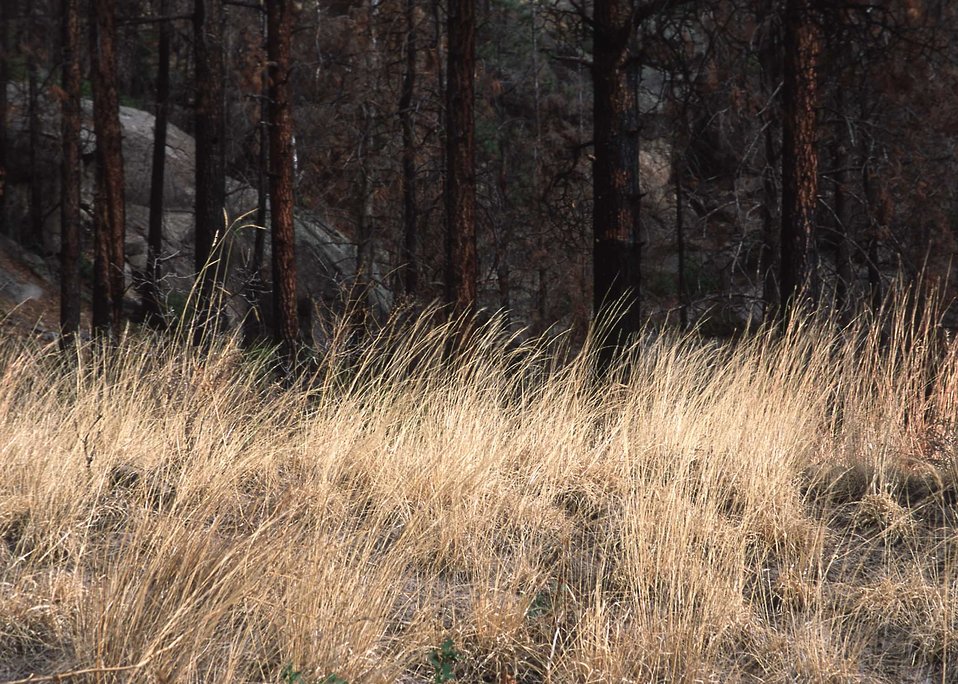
First years growth of emergency reseeding after the Los Alamos fires. Some of the species planted for erosion control and habitat improvement were prairie junegrass, slender wheatgrass, mountain brome, three awn, gambel's oak, and mountain mahogany.